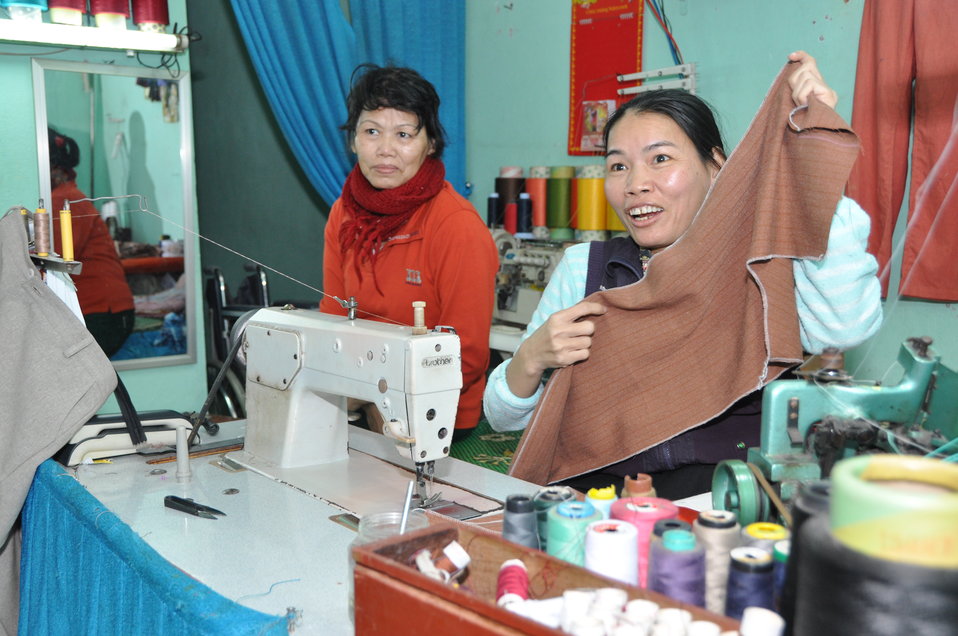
Le Thi Het receives support to boost her income from sewing.

Ms. Le Thi Het received a USAID funded wheelchair and regular physical therapy services as part of a three-year project in Danang.